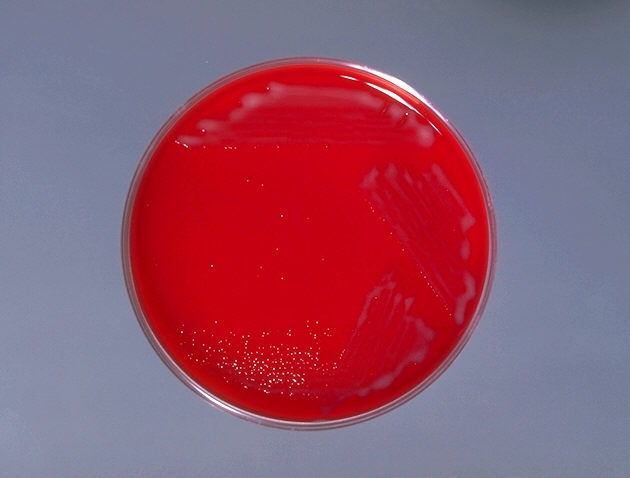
Blood agar plate culture of Corynebacterium equi.